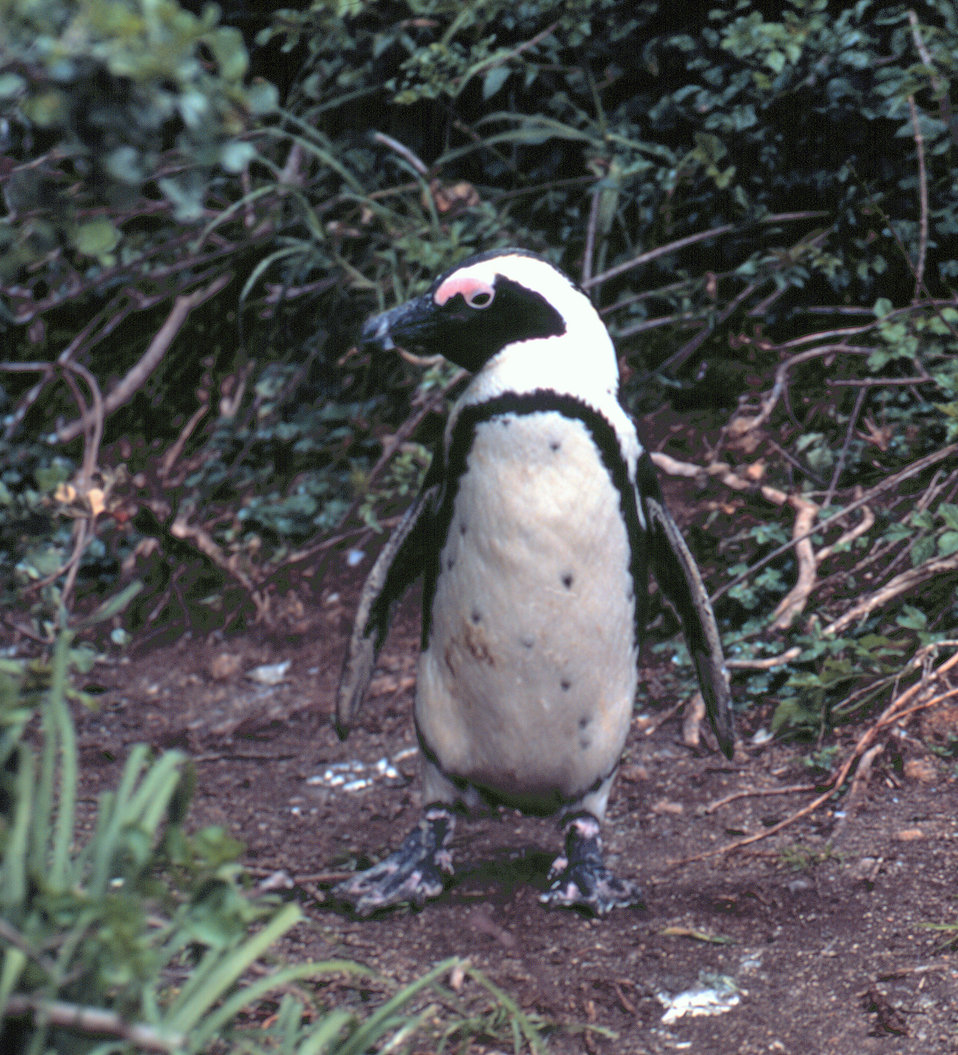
An African penguin